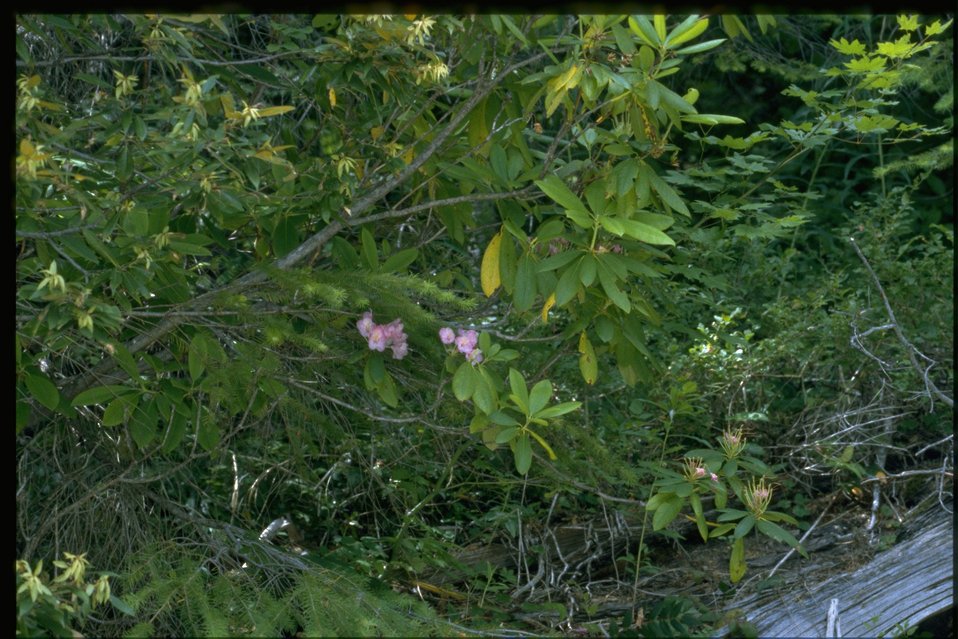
Farshot of Rhododendron macrophyllum.